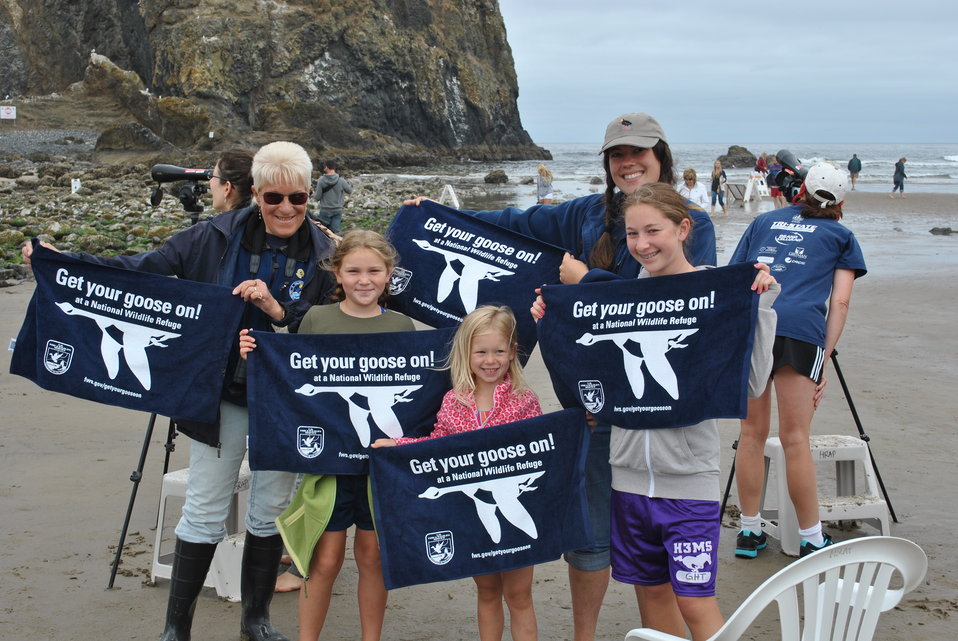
Get Your Goose On!

USFWS Volunteer Sandi Wicklund and Octavia Sola' use spotting scopes to get an up-close view of seabirds nesting on Oregon Islands NWR with Emma, Gracie, and Addie as they visit Cannon Beach during the summer nesting season.